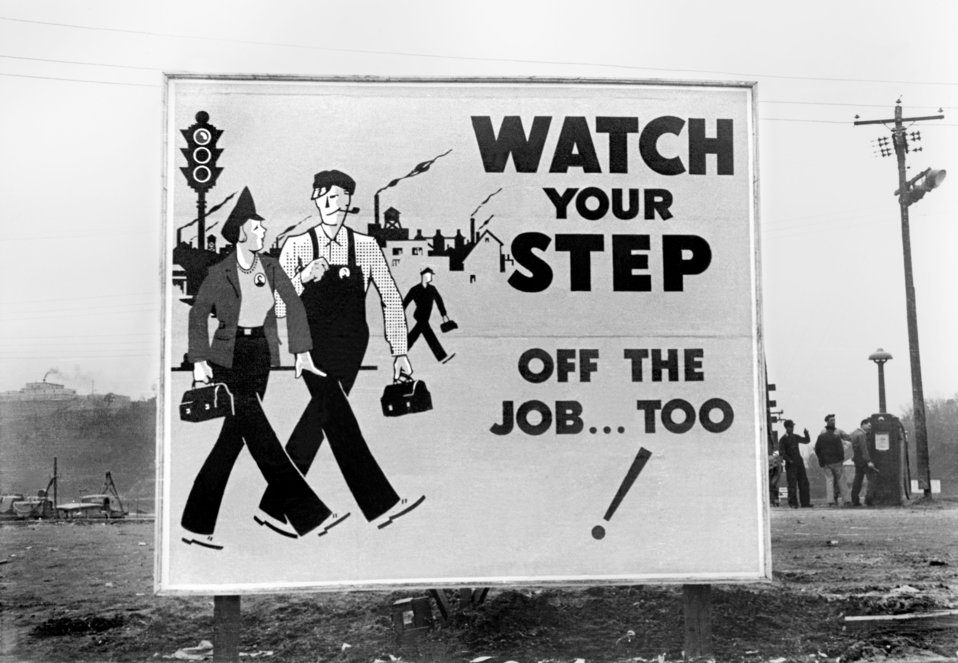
Billboard 1944 Oak Ridge

roll172 DOE photo Ed Westcott 1-21-1944 Oak Ridge Tennessee